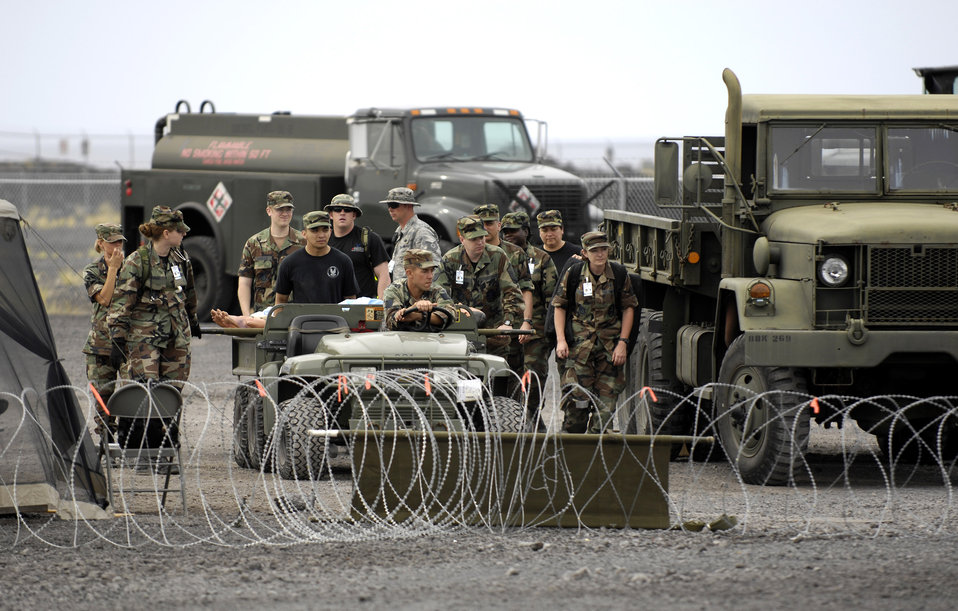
Providing a lifeline

Medics transport patients to a nearby clinic during Exercise Pacific Lifeline Feb. 5 at Kona International Airport, Hawaii. Pacific Lifeline is a total force exercise staging from three locations within the Hawaiian Islands. It provides approximately 900 Department of Defense members a test environment to rapidly deploy and provide time-critical services in the wake of a simulated natural disaster.